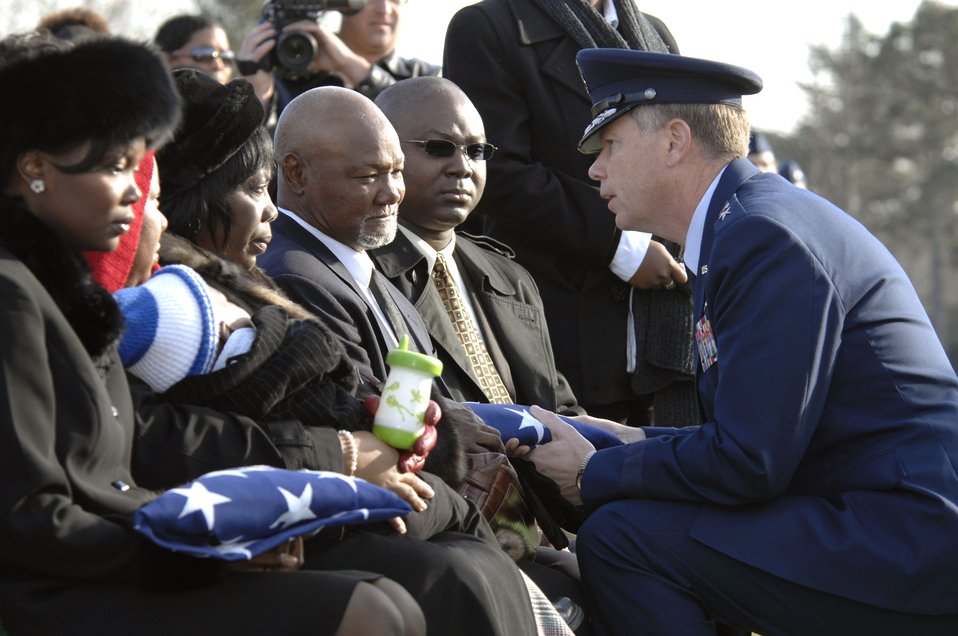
One final flight

Maj. Gen. Del Eulberg presents a flag to Margaret and Charles Evans, the parents of Capt. Kermit Evans during his funeral Dec. 12 at Arlington National Cemetery. More than 200 friends and relatives gathered to pay their respects to Captain Evans, a member of the 27th Civil Engineering Squadron Explosives Ordnance Disposal Flight at Cannon Air Force Base, N.M. He was deployed to Iraq when the helicopter he was a passenger in made an emergency landing and crashed. He was one of the four out of 16 who were killed as a result of the crash. He is srvived by his wife, Perneatha, and Kermit Jr., their 13-month-old son.